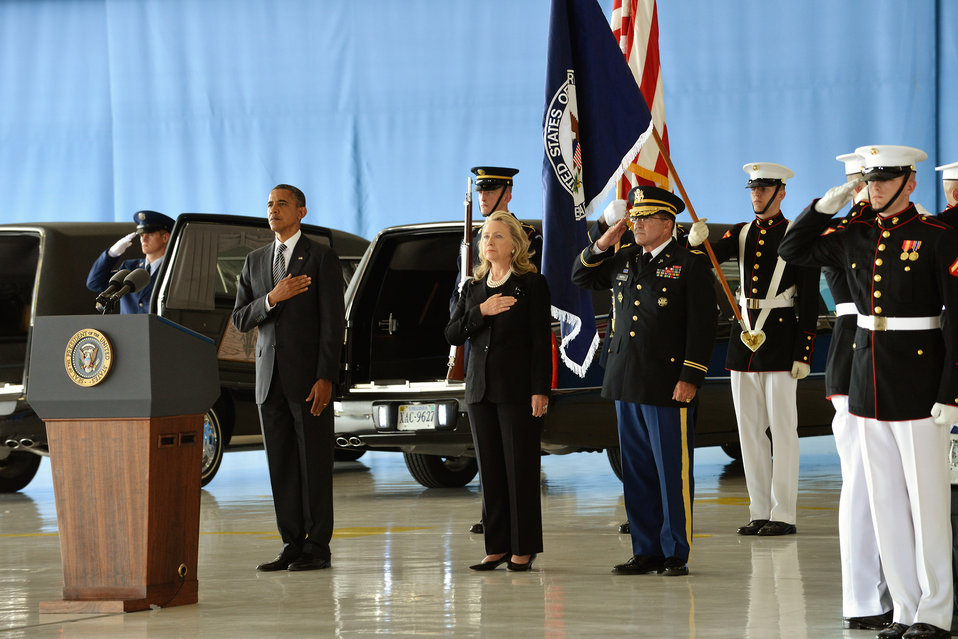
President Obama and Secretary Clinton at the Transfer of Remains Ceremony to Honor Those Lost in Attacks in Libya

President Barack Obama and U.S. Secretary of State Hillary Clinton honor the Benghazi victims at the Transfer of Remains Ceremony held at Andrews Air Force Base, Joint Base Andrews, Maryland, September 14, 2012. An attack on the U.S. diplomatic mission in Benghazi, Libya claimed the lives of Ambassador J. Christopher Stevens, Information Management Officer Sean Smith, and security personnel Tyrone S. Woods and Glen A. Doherty on September 11, 2012.